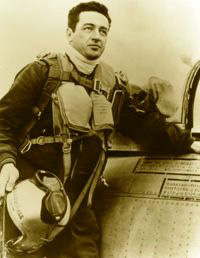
51st Fighter Wing Aces

Capt. Joseph McConnell Jr. became the 10th ace of the wing on Feb. 16, 1953. He became the second double ace of the wing on April 24, 1953, and the first triple ace on May 18, 1953. Capt. McConnell was the Top Ace of the Korean War (16 kills), and was assigned to the 39th Fighter-Interceptor Squadron.